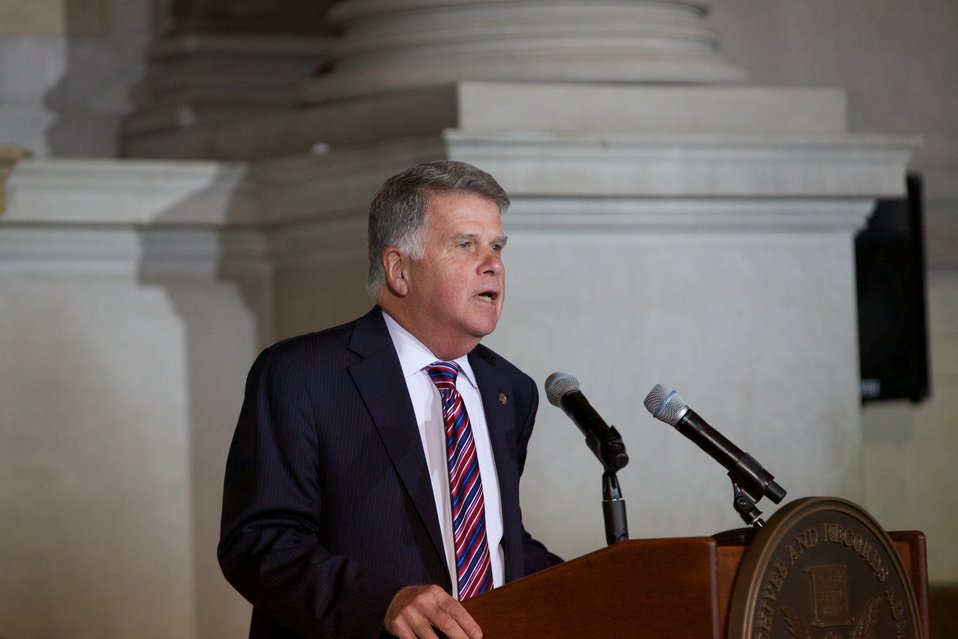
Naturalization Ceremony with Michelle Obama